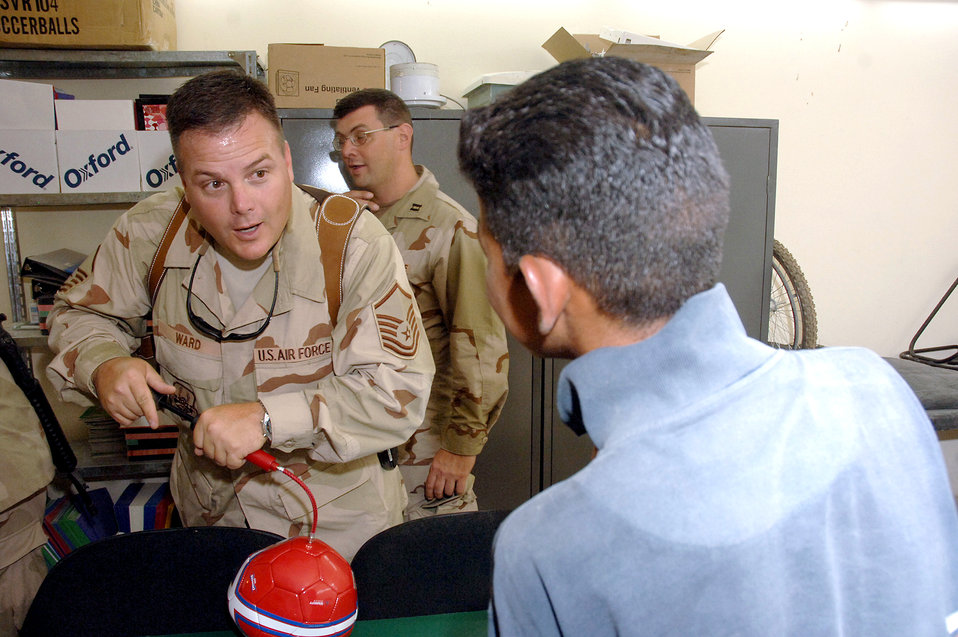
Airmen pitch in for worthy cause in Iraq

Master Sgt. Matt Ward tells an Iraqi boy that he can have the soccer ball as soon as he pumps it up. They were at the Army's Civil Military Operations Center at the Radwinya Palace Complex near Sather Air Base, Iraq, on Saturday, June 3, 2006. The complex provides medical care and other services to Iraqi villagers. Sergeant Ward and several other Airmen volunteer at the facility. Sergeant Ward is assigned to the 447th Air Expeditionary Group and is deployed from Eglin Air Force Base, Fla.